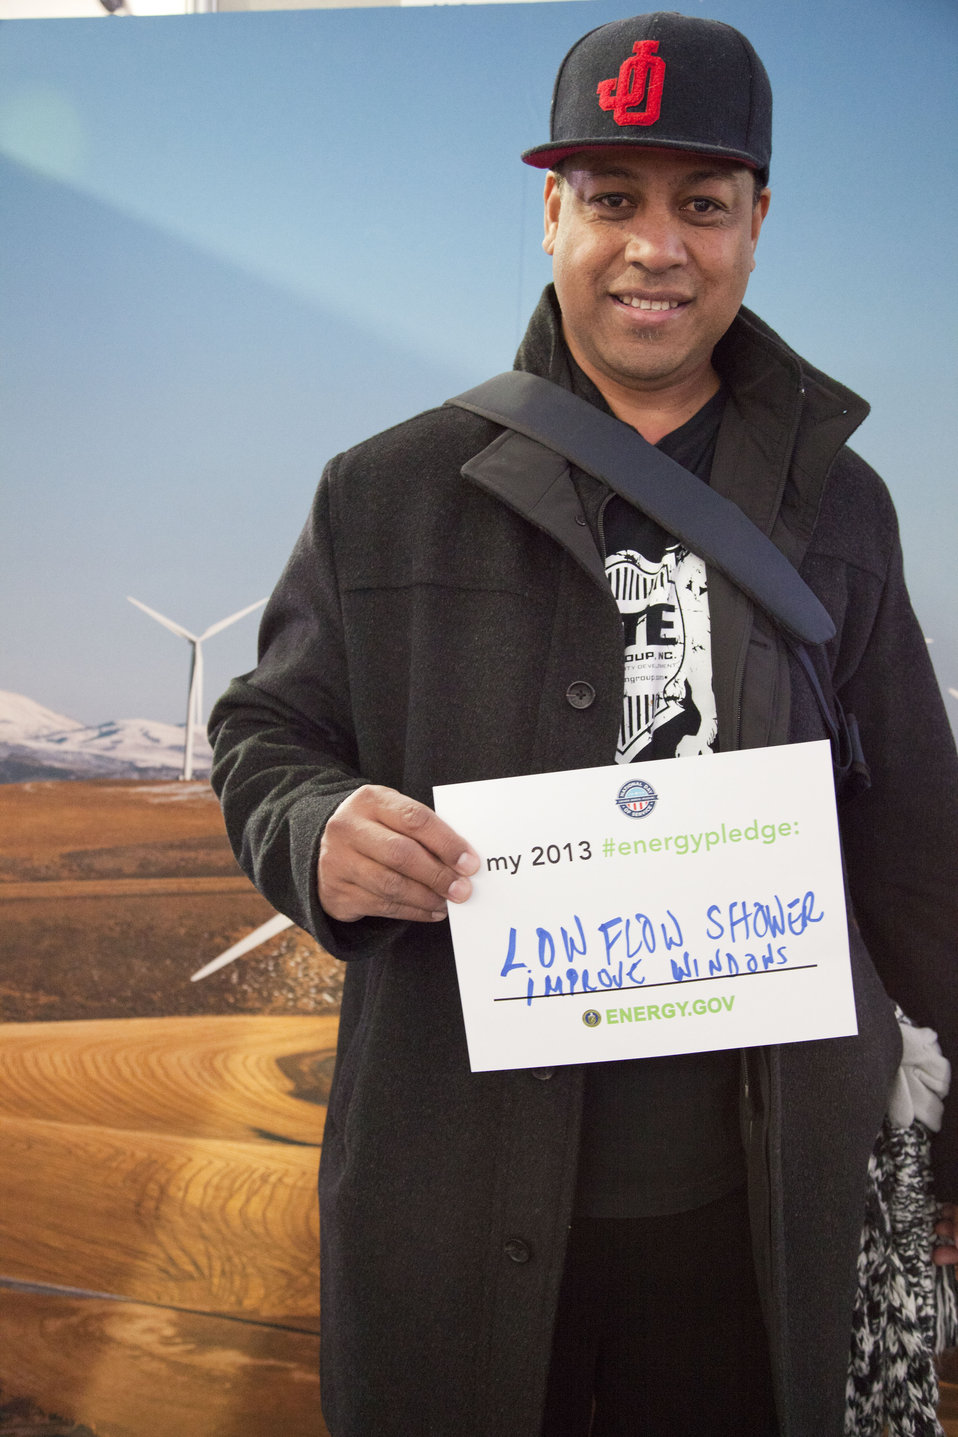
What's your #energypledge?